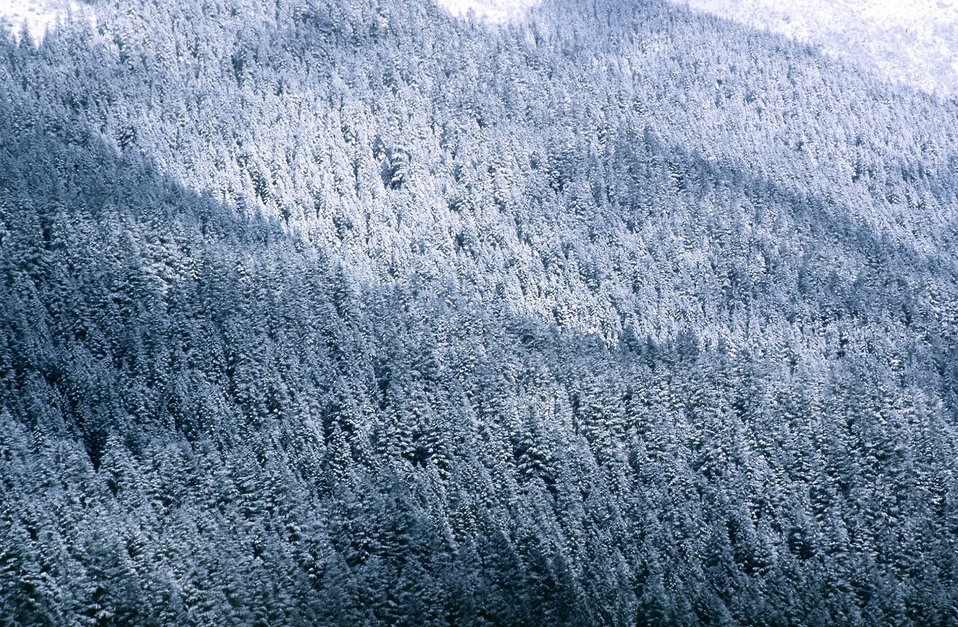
Mid Winter forest scene in the Mollala Corridor.